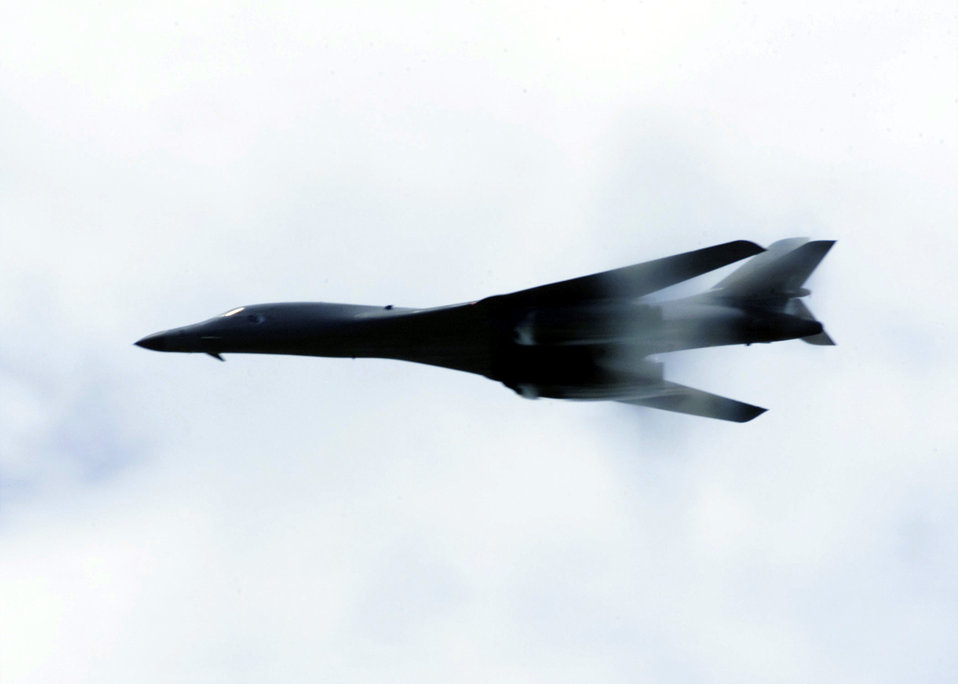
Low pass

OPERATION ENDURING FREEDOM -- A B-1B Lancer performs a low-level fly-by for troops deployed for Operation Enduring Freedom on Oct. 27. The B-1B's three internal weapons bays can accommodate up to 84 MK-82 general purpose bombs or MK-62 naval mines, 30 CBU-87/89 cluster munitions or CBU-97 Sensor Fused Weapons.